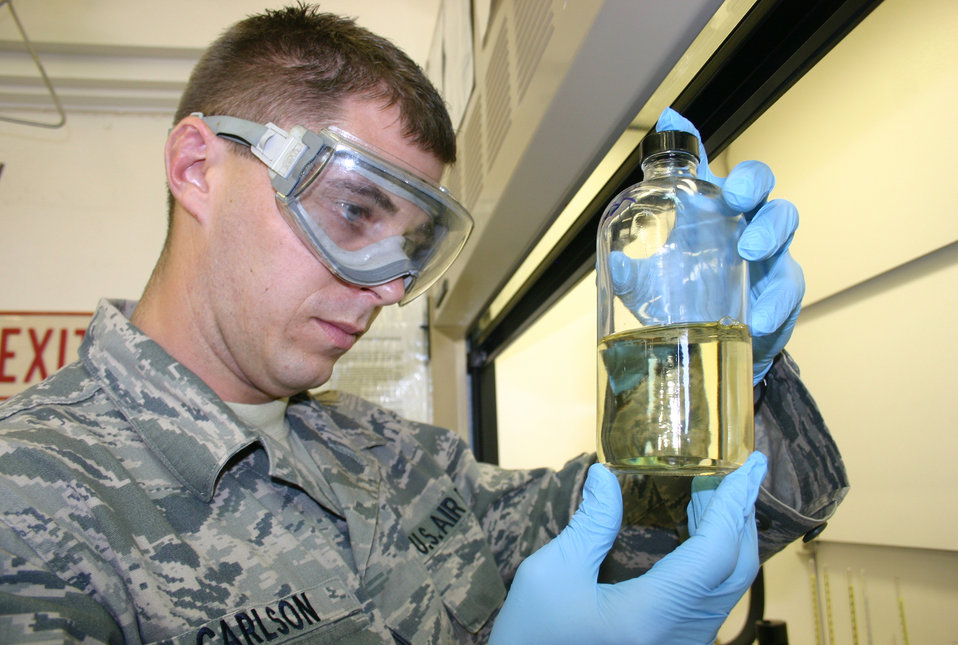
MacDill Saving on Gas

Staff Sgt. Benjamin Carlson examines a sample of jet fuel. Preserving the fuel is what is behind constant monitoring and planning at MacDill Air Force Base, Fla., ensuring no more is used during KC-135 Stratotanker missions than is needed. Sergeant Carlson is the NCO in charge of the 6th Logistics Readiness Squadron Fuels Lab.